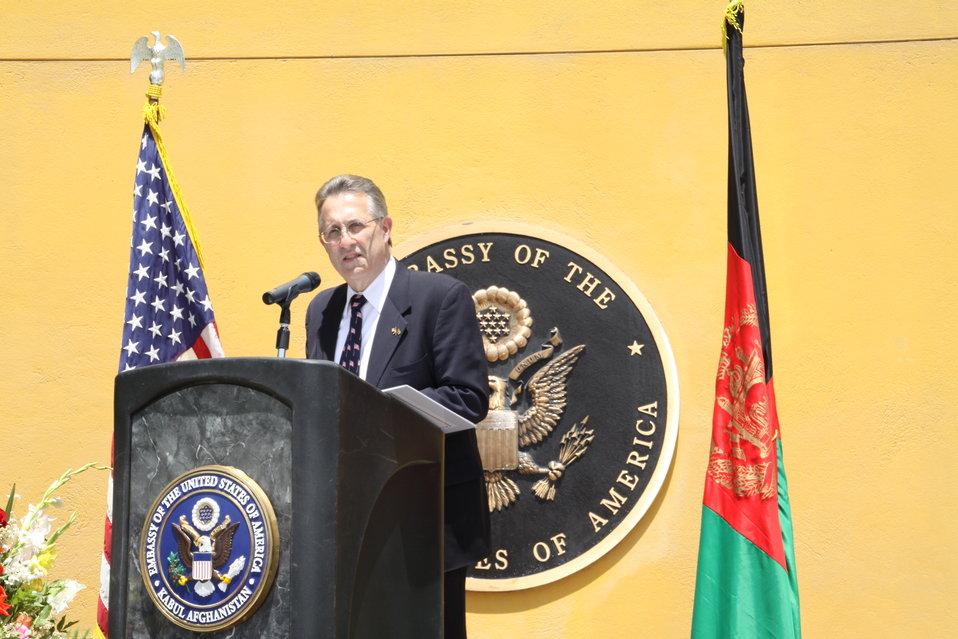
Kabul Official July 4th Celebration